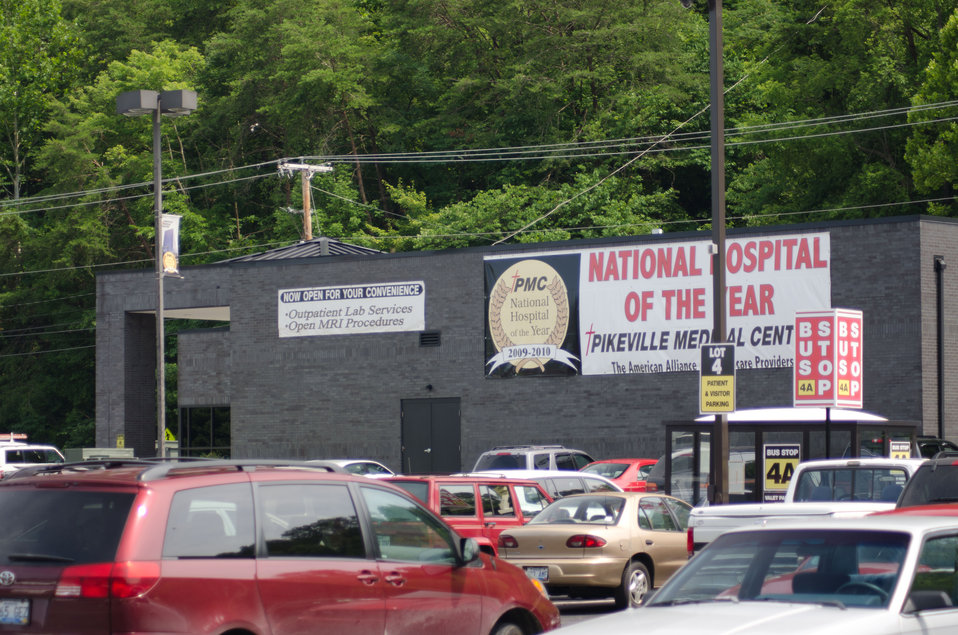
Detour, arrow, construction and temporary signs are posted on and across the re-utilized buildings and properties at various ends of multiple parking lots are common sights at the Pikeville Medical Center on Tuesday, July 12, 2011, in Pikeville, KY. Nearby, the above ground construction phase of Pikeville Medical Center (PMC) expansion project is underway, after months of infrastructure construction and rain delays. This is one of Kentucky’s largest American Recovery and Reinvestment Act (ARRA) projects. The $44.6 million Community Facilities Loan will finance construction of a new medical office building and parking garage.